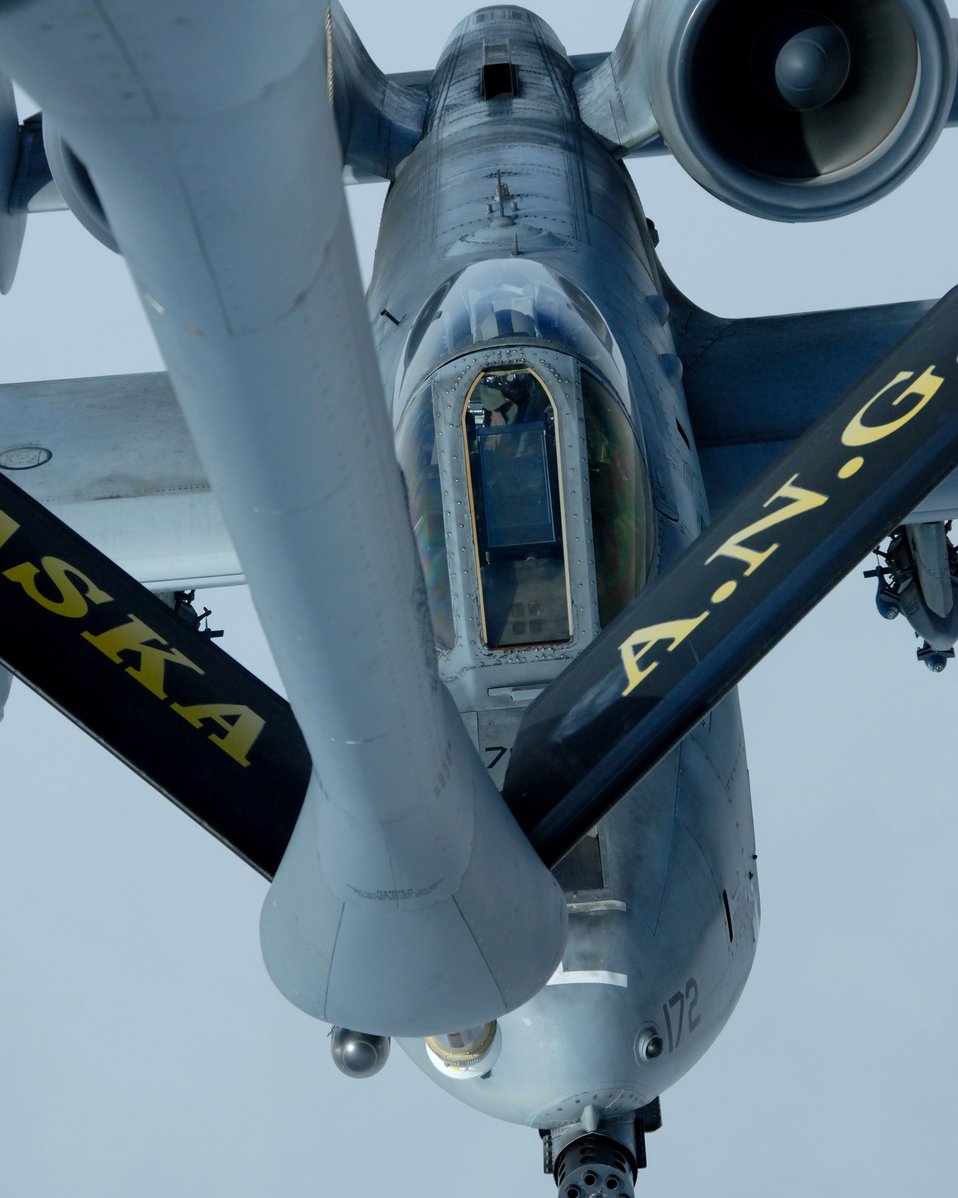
Arctic refueling

Capt. Oliver Rick positions his A-10 Thunderbolt II behind a KC-135 Stratotanker for aerial refueling April 4 over the Pacific Alaska Range Complex. The 355th Fighter Squadron provides mission ready A-10s and has a search and rescue capability for Alaska and deployed sites worldwide. Captain Rick is a 355th Fighter Squadron pilot. The KC-135 is from the 168th Air Refueling Squadron, and both aircraft are from Eielson Air Force Base, Alaska.